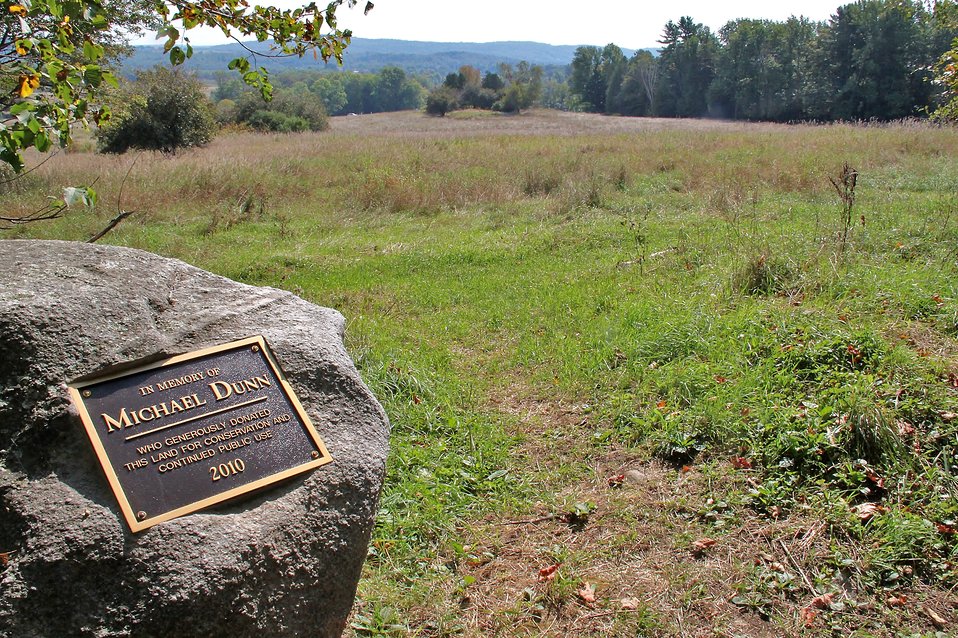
Dunn Plaque-Eagle Point Unit of Missisquoi National Wildlife Refuge

Plaque dedicating land to donor Michael Dunn at Eagle Point Unit of MNWR